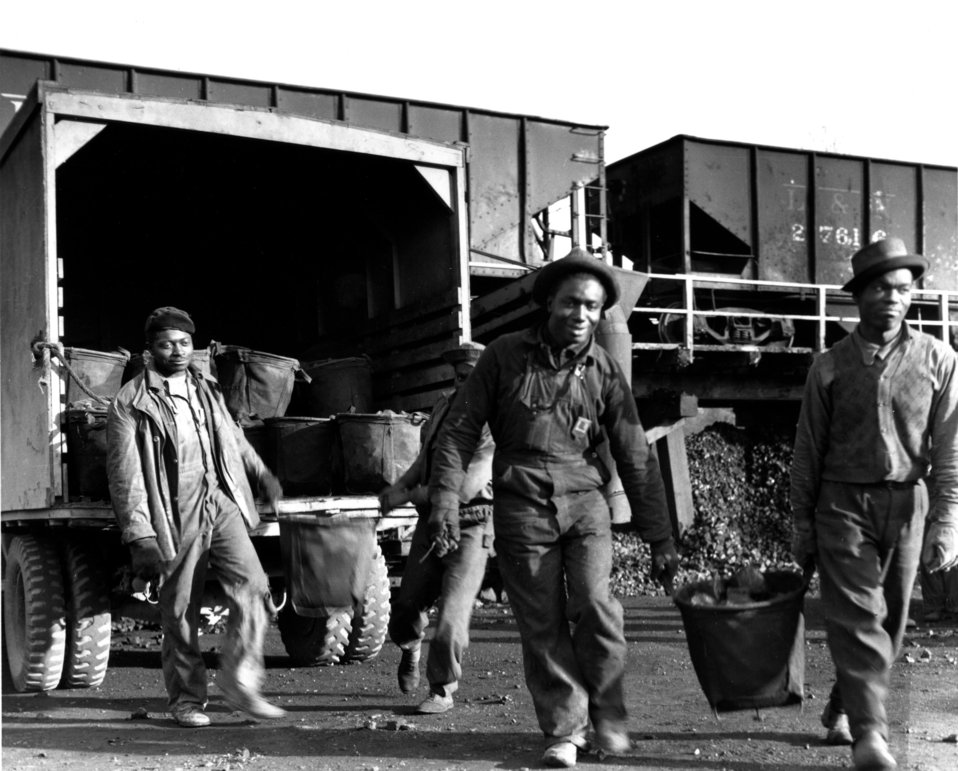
Business activity at Oak Ridge